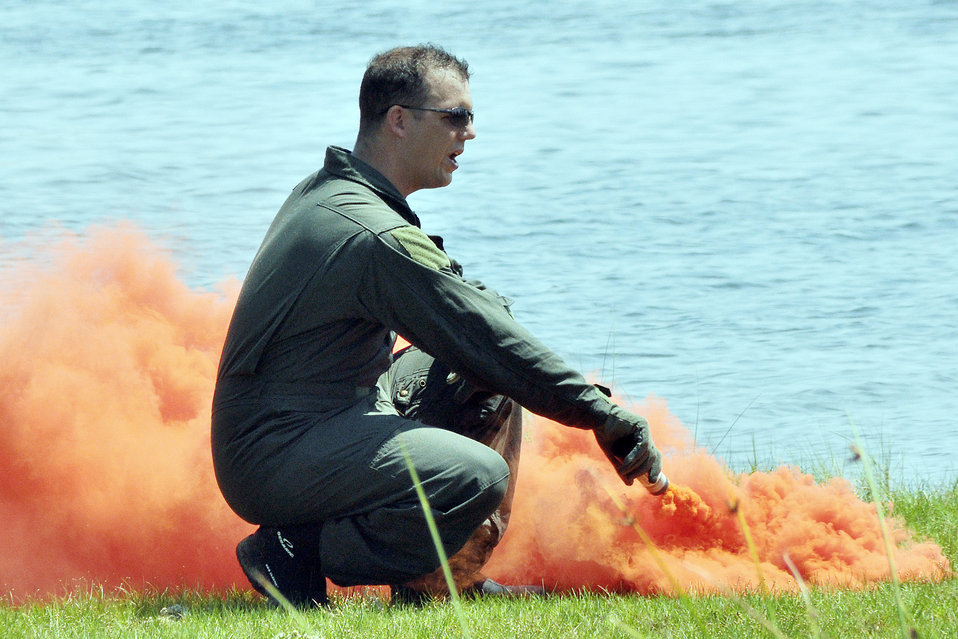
Smokin'

Staff Sgt. Benjamin Rosciglione demonstrates the proper way to use a smoke flare to pilots June 26 during a Survival, Evasion, Resistance, Escape training exercise at Eglin Air Force Base, Fla. Pilots must undergo SERE continuation training every three years.